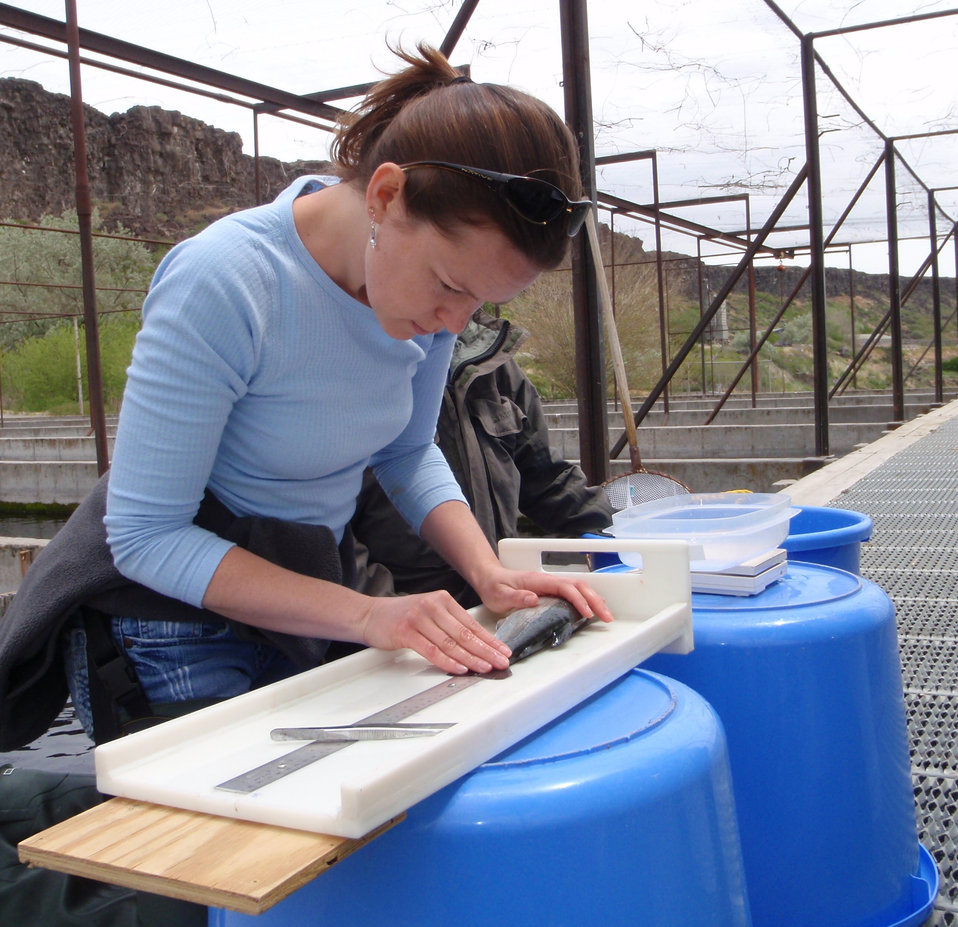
Niccole Wandelear measuring lengths of rainbow trout during a SLICE field efficacy study.

Rachel Carson Award for Scientific Excellence (Group) – 2013